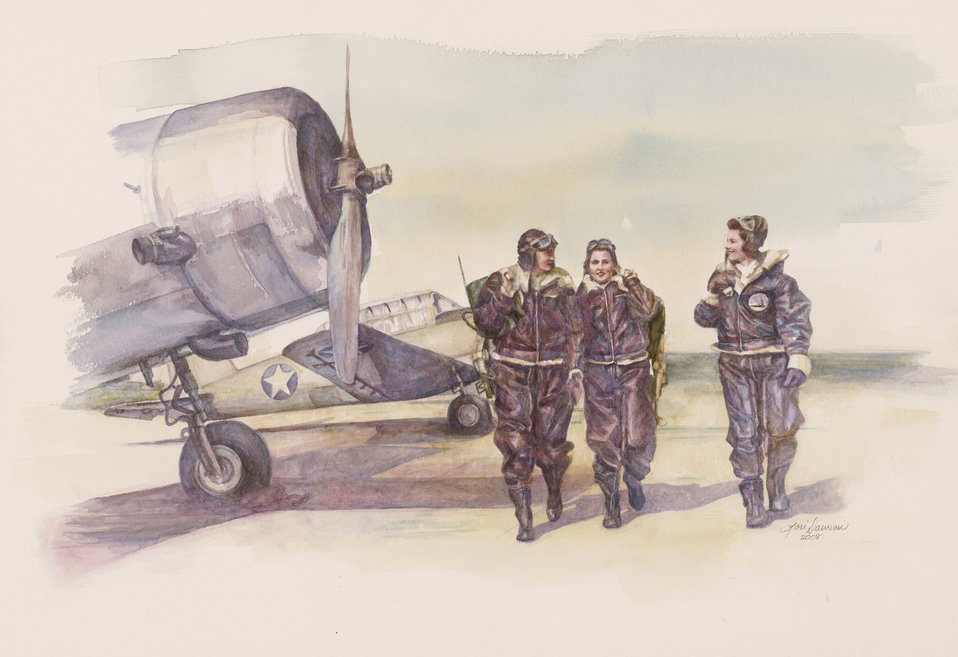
Bolling officials to display 200 new Air Force paintings